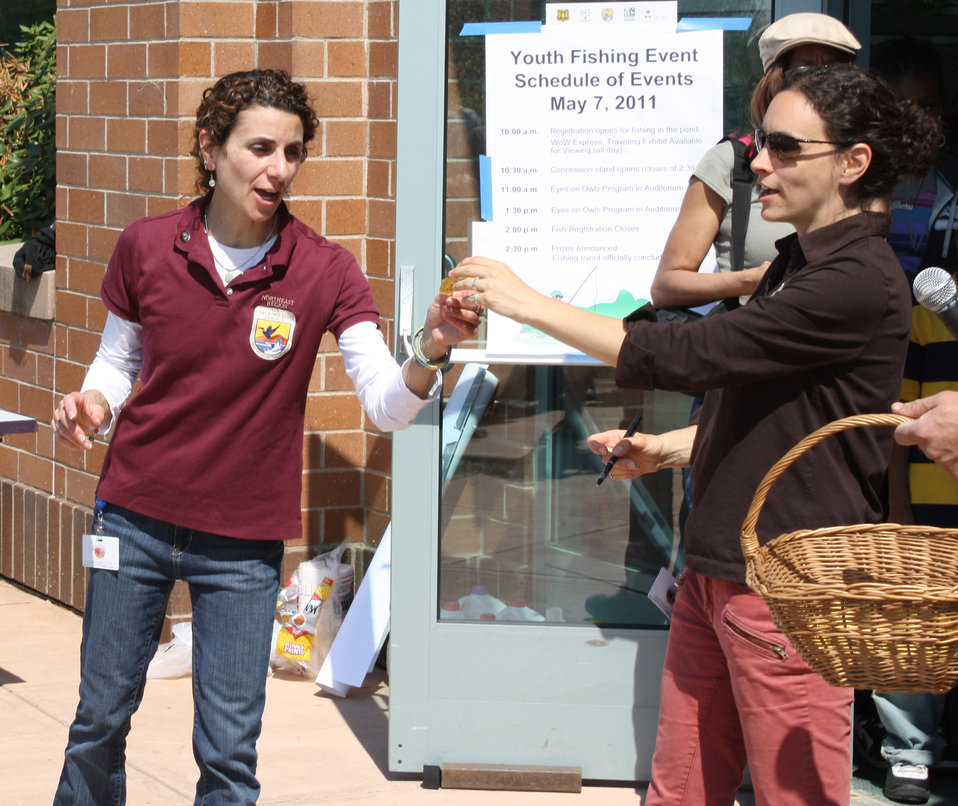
Announcing the raffle winner

USFWS fishing derby in Hadley, MA on May 7th.